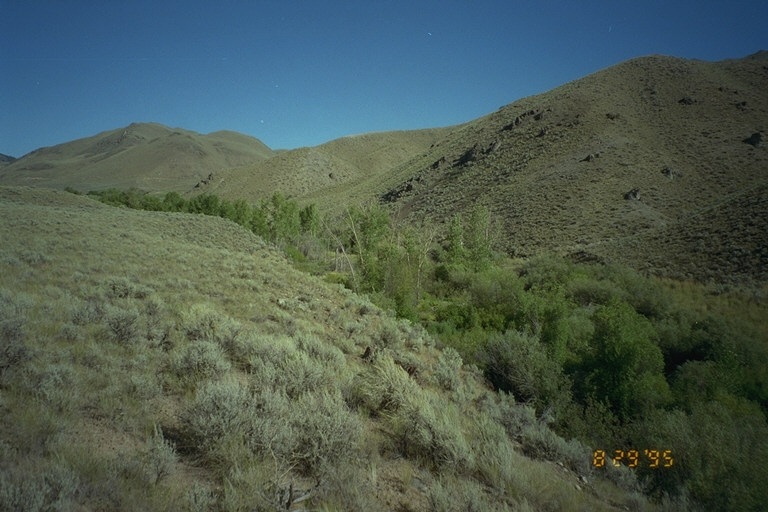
Riparian area Public Lands Salmon Field Office UCSC Upper Columbia Salmon Clearwater District